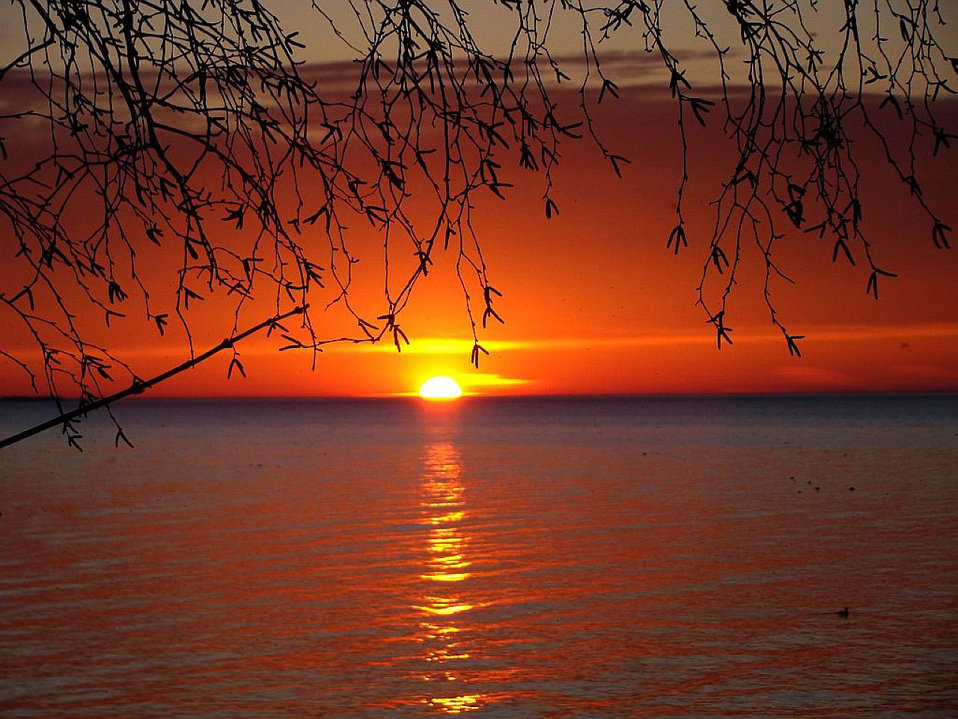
Great lakes sunset

Lake huron sunset.